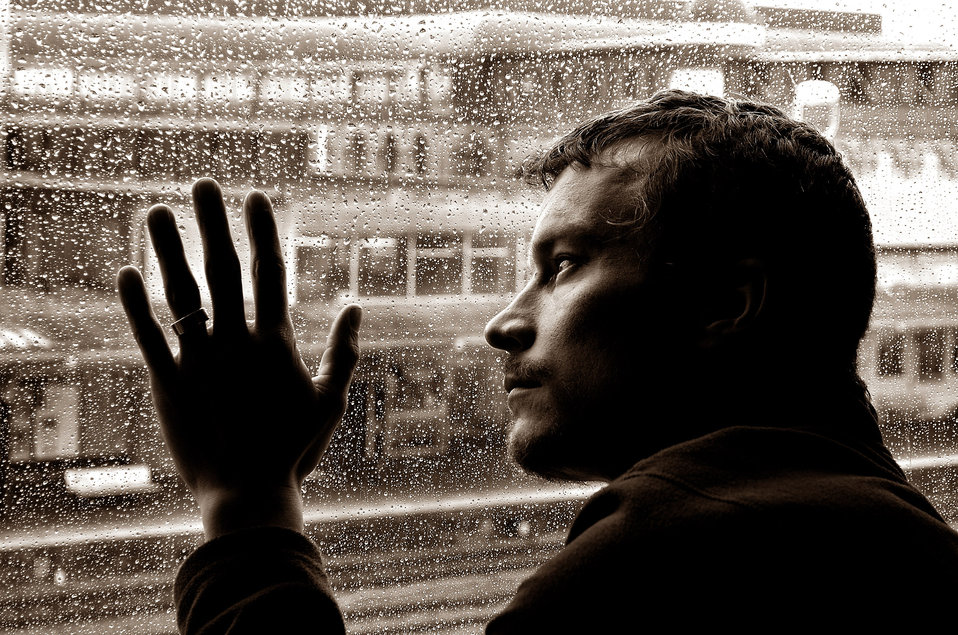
Sad man and rain.